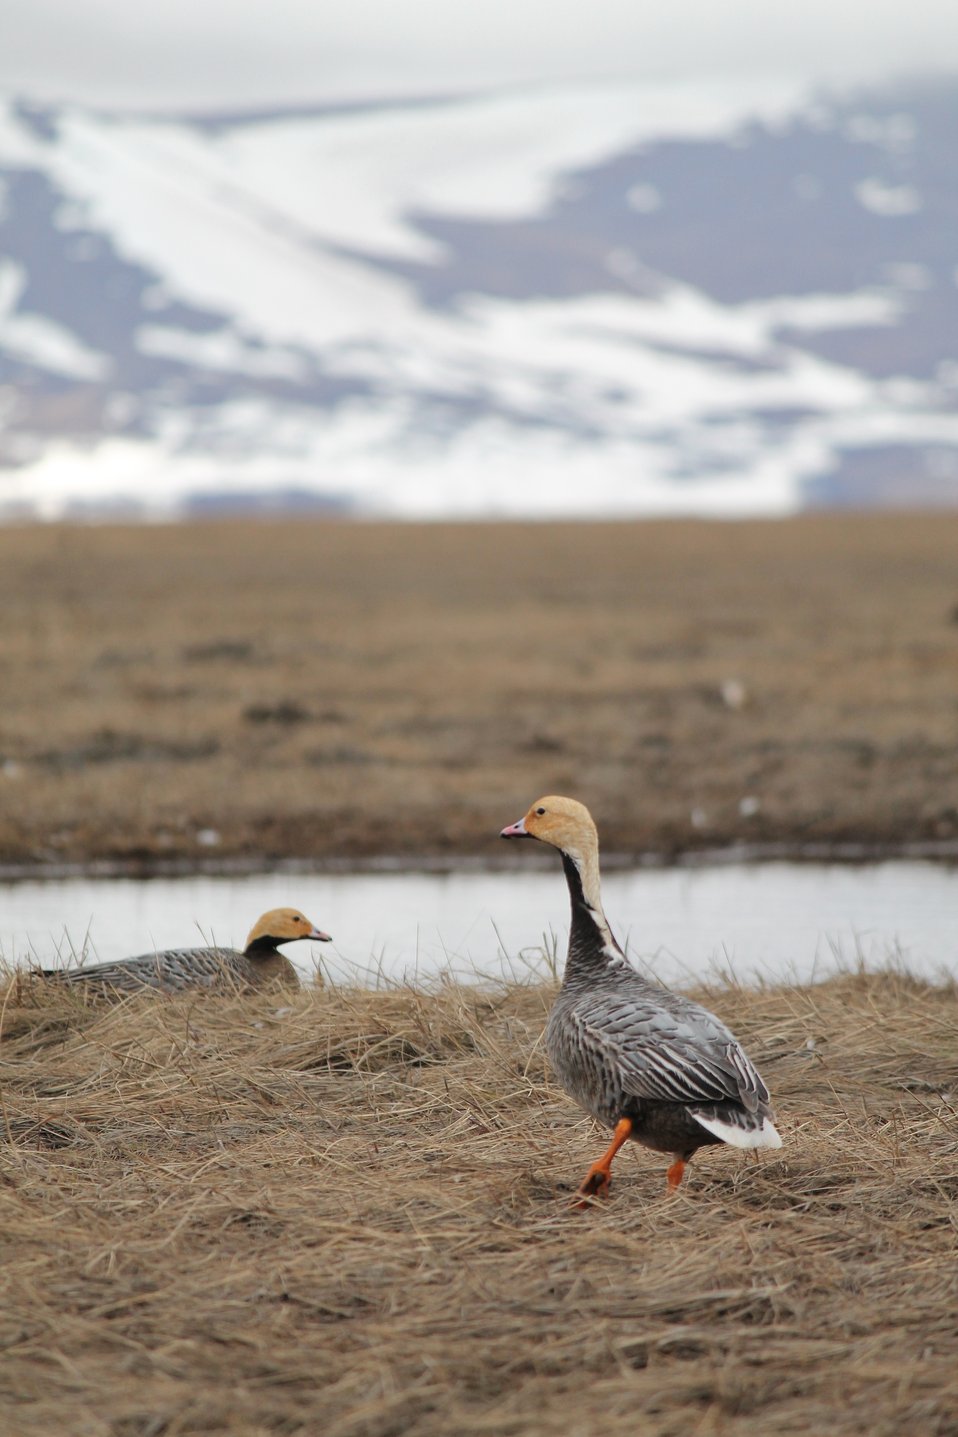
Emperor Goose Pair

The majority of Emperor Geese breed on Yukon-Kuskokwim Delta in western Alaska. hey are a marine goose in that they nest and raise young in coastal, tidally-influenced habitats, feed on sedges and grasses, and spend their entire non-breeding periods in intertidal habitats feeding on marine invertebrates, plants, and algals.
Population survey data indicate that Emperor Goose numbers in Alaska declined from the mid 1960s to mid 1980s, and have remained low and below management goals since then. Fall age ratio surveys have indicated low production over the last decade. Possible causes for this include changes in abundance of preferred sedges, predation by Arctic foxes and glaucous gulls, and competition with increasing numbers of other goose species.

USFWS Yukon Delta NWR